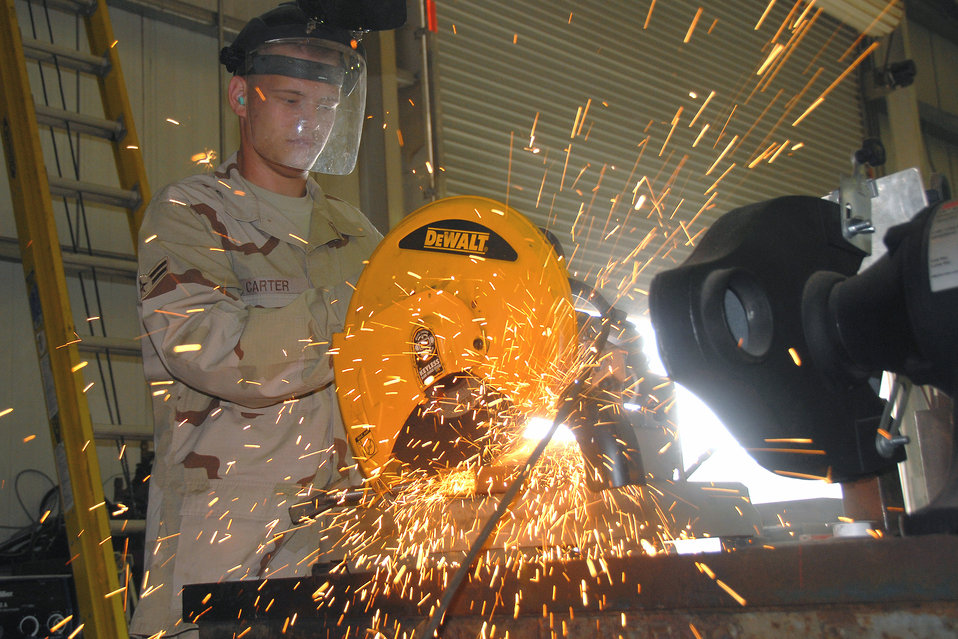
Chop shop

Airman 1st Class Mack Carter uses a metal chop saw to cut a square stock for a window frame Aug. 13 at a Southwest Asian air base. Airman Carter is assigned to the 380th Expeditionary Civil Engineer Squadron deployed from Ramstein Air Base, Germany.